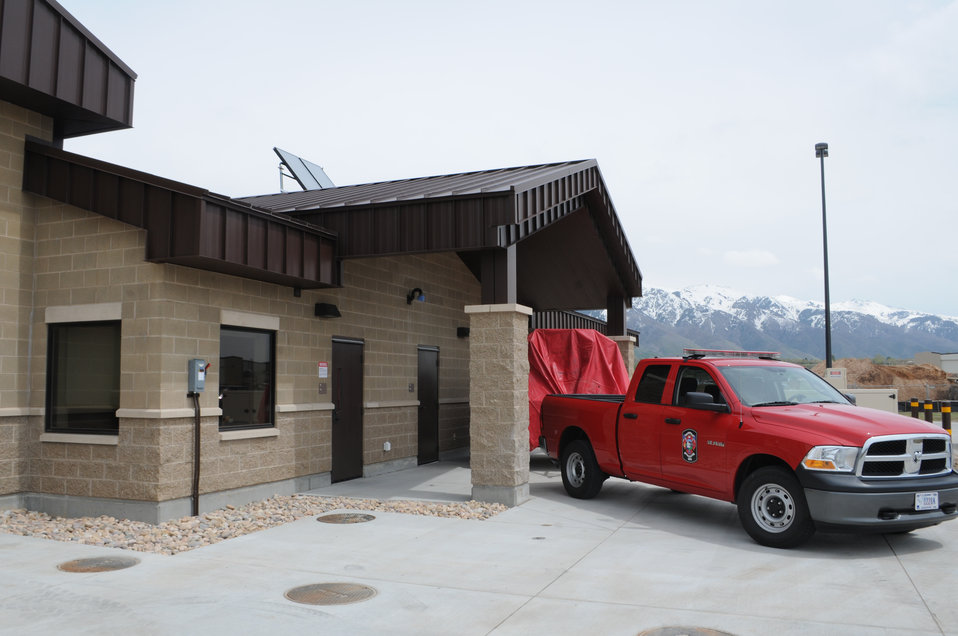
Corps completes first Gold-rated facility at Hill Air Force Base

A view of the back entrance to the new three-bay fire station at Hill Air Force Base, Utah, May 16, 2011. The U.S. Army Corps of Engineers Sacramento District oversaw construction of the $4.5 million facility, which received a Gold rating under Leadership in Energy and Environmental Design. The facility is the first fire station built at Hill since 1943 and was positioned to support the existing C-130 hangar along with the growing F-22 complex at the base.